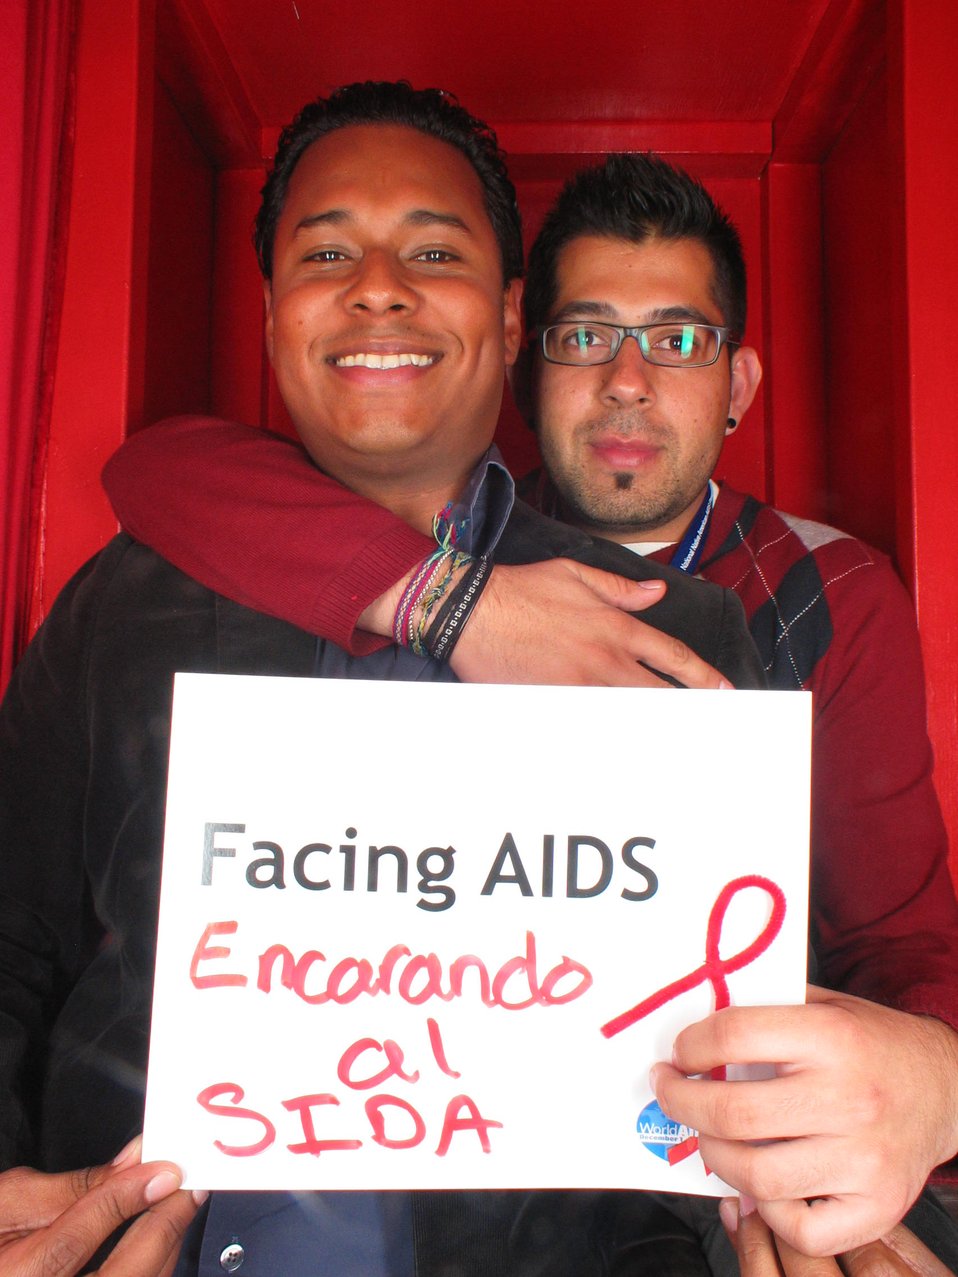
Facing AIDS encarando al SIDA.